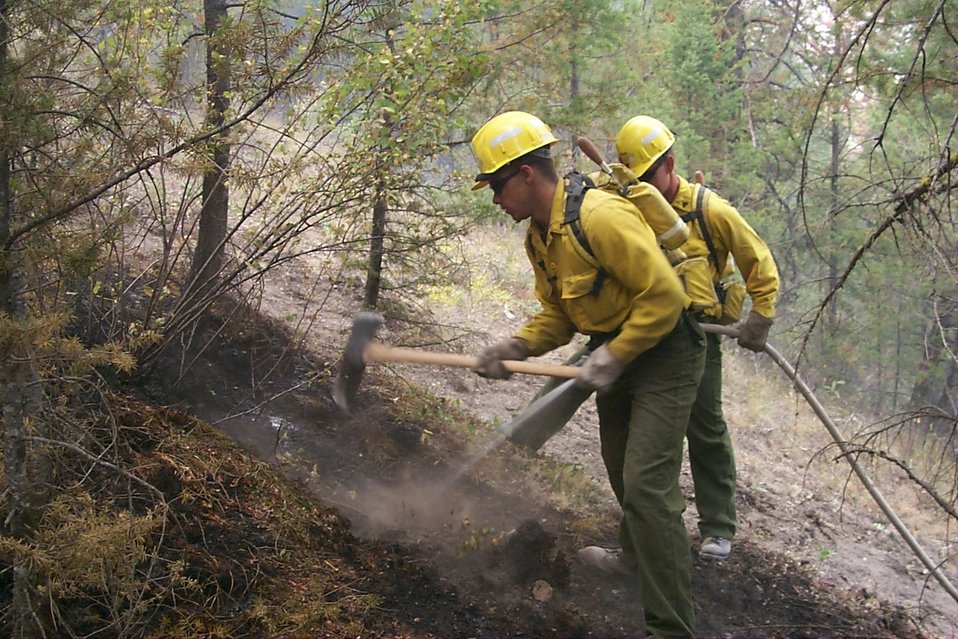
Line crew Fire Clearwater Fire Salmon Field Office USRD Upper Snake River District